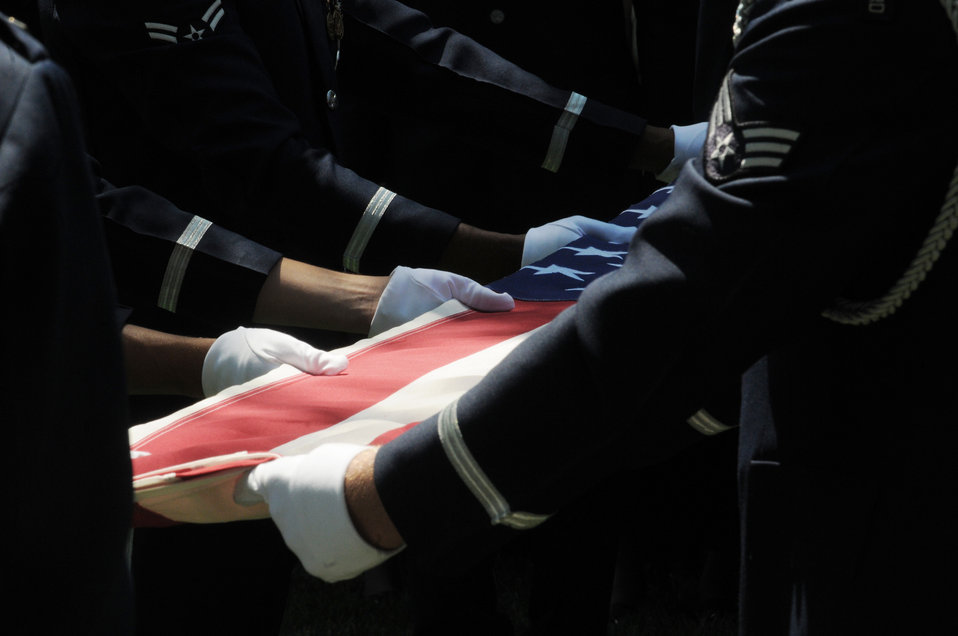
The last to let you down

A United States Air Force Honor Guard body bearer team folds the U.S. flag during a full-honors funeral ceremony at Arlington National Cemetery. Honor Guard body bearers train constantly to maintain the precision they are known for. Their standards of flawlessness are set out of necessity to honor fallen Airmen.